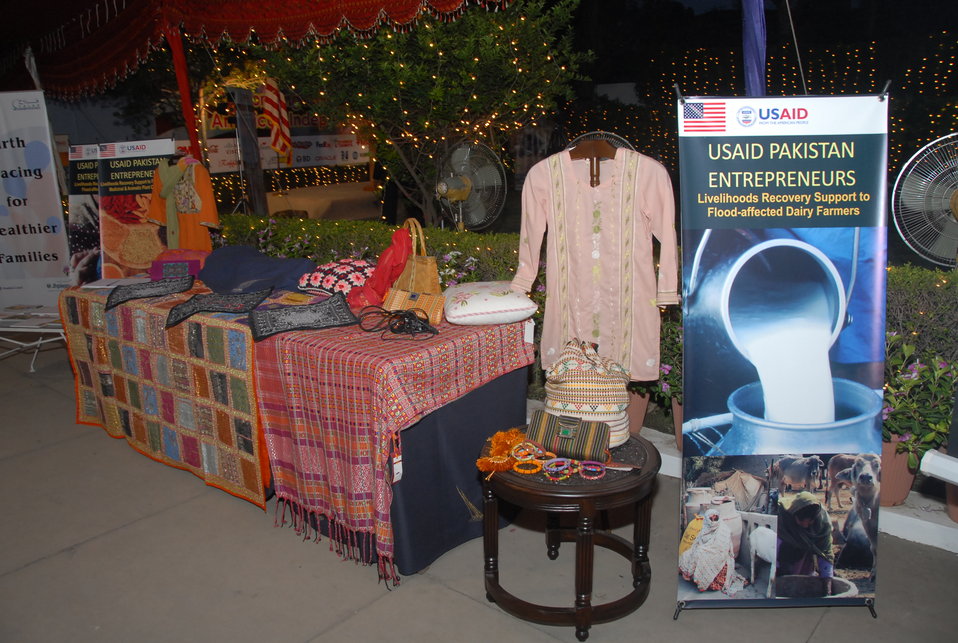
Celebration of America’s Independence Day

Lahore, June 30, 2011 - Celebration of America’s Independence Day in Lahore featured a series of USAID displays to introduce guests to U.S. assistance programs in Pakistan. Guests saw examples of USAID’s work in the economic growth sector, health, education, agriculture, democracy and governance, and energy.